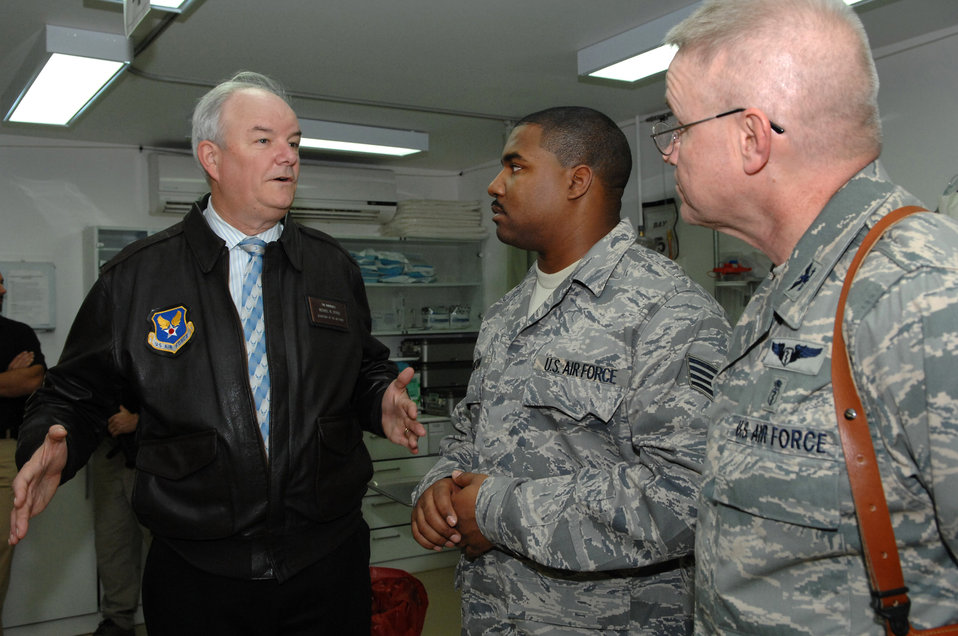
SECAF Visits Balad

Secretary of the Air Force Michael Wynne talks with Staff Sgt. Andre Rouzan, 332nd Expeditionary Medical Group technician, about the medical miracles that have taken place at the Air Force Theater Hospital here, Feb. 2. The hospital serves as the primary medical treatment facility for wounded servicemembers in Iraq. Sergeant Rouzan is deployed from Lackland Air Force Base, Texas.